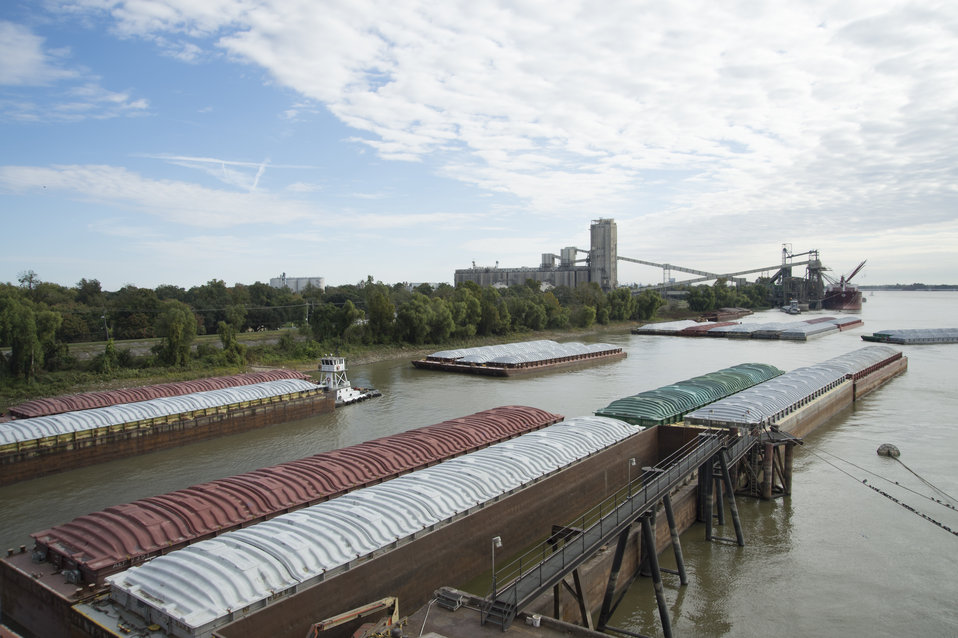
Barges lined up waiting to transfer grain to storage facilities near the Port of New Orleans in New Orleans, LA on Tuesday, Nov. 19, 2013.